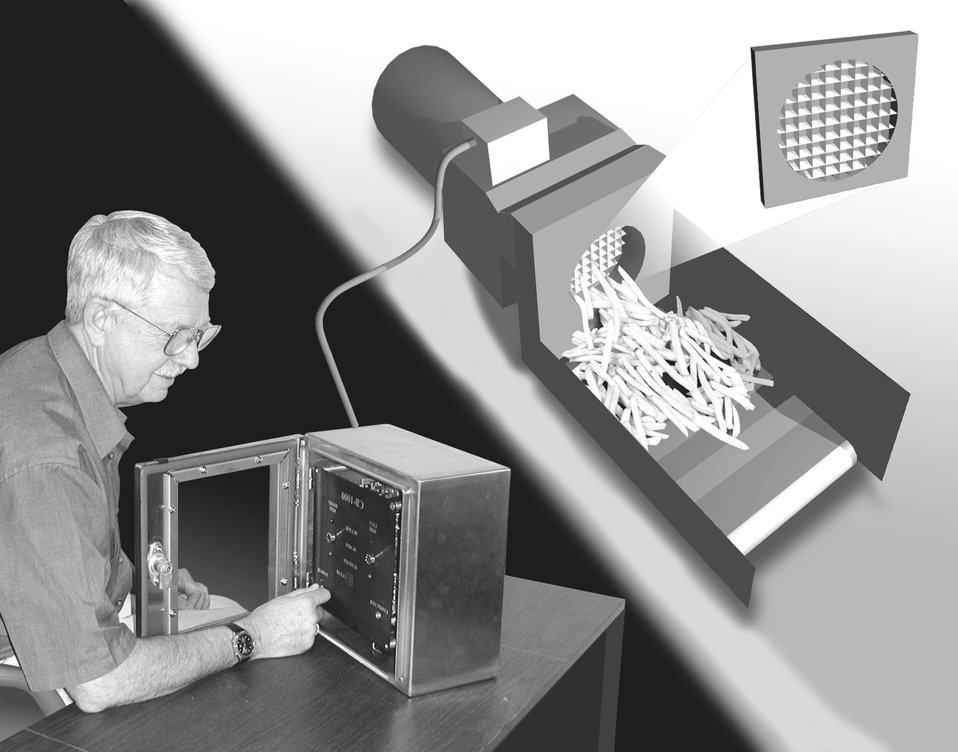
The PNNL developed multi-blade failure detector for food processing.

Researchers at the Pacific Northwest National Laboratory developed the multi-blade failure detector for food processing, currently in use at food processing plants worldwide. The monitor detects knife failures on food processing lines within one minute, triggering an alarm for blade replacement. This technology was one of 11 doe developed technologies to be selected by the federal laboratory consortium to receive the 2001 Excellence in Technology Transfer Award.